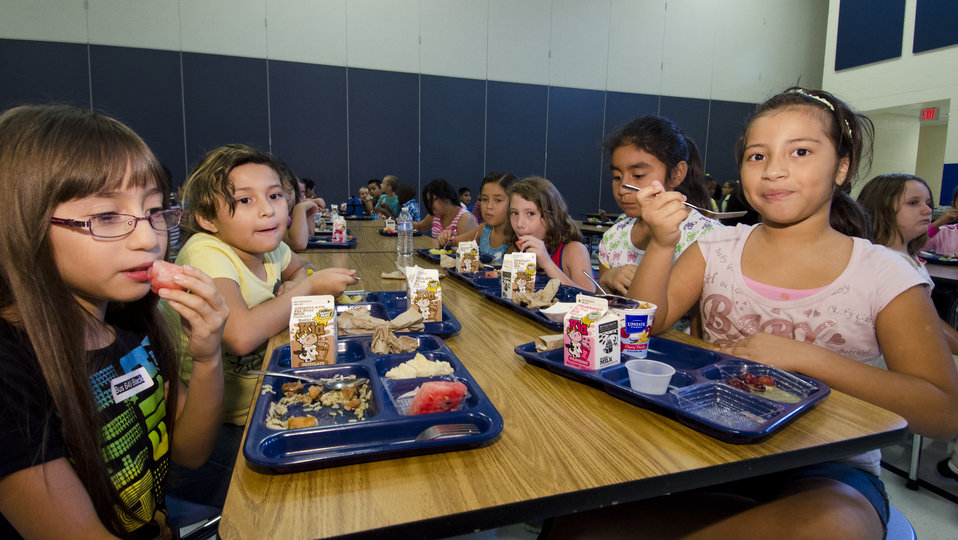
School lunch staff and students enjoy the new school lunch menu created to meet the new standards at the Yorkshire Elementary School in Manassas, VA on Friday, Sept. 7, 2012.